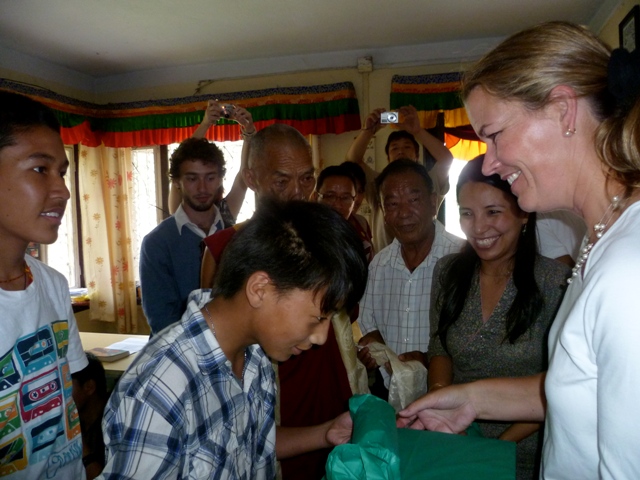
DAS Clements Is Greeted By a Group of Tibetan Refugee Youth

Deputy Assistant Secretary of State for Population, Refugees and Migration Kelly Clements is greeted by a group of Tibetan refugee youth in Kathmandu, Nepal, at the local NGO Himalayan Roots to Shoots on June 5, 2011. DAS Clements visited Bhutan from June 2 to 5, and Nepal from June 5 to 6, to discuss humanitarian protection and assistance issues for refugees and other vulnerable populations in the region.